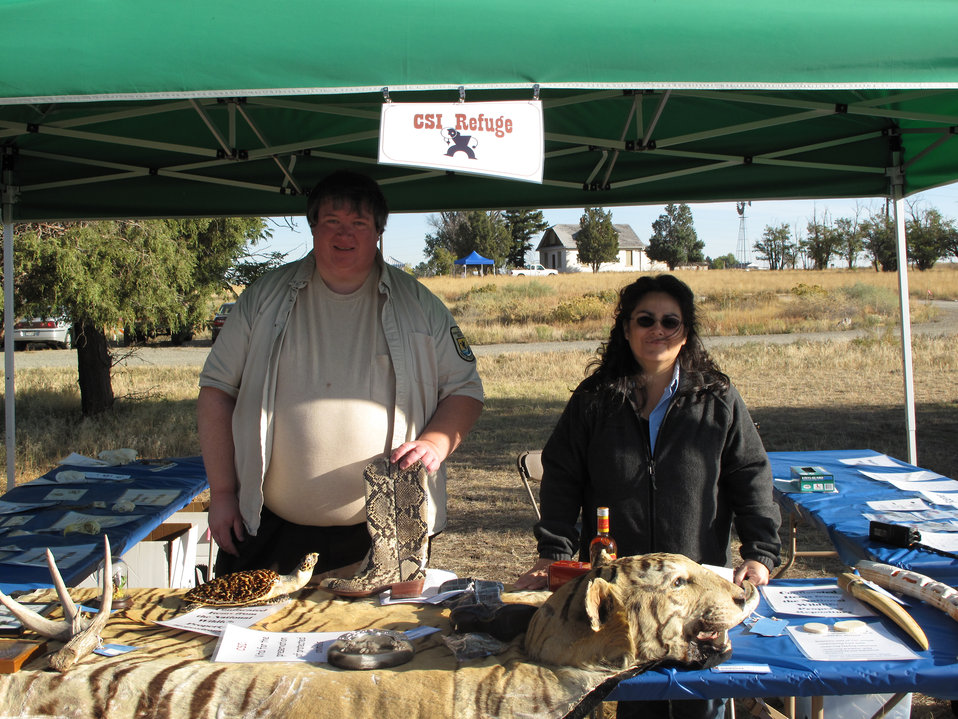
Refuge Round-up 2010

Your very own CSI adventure!